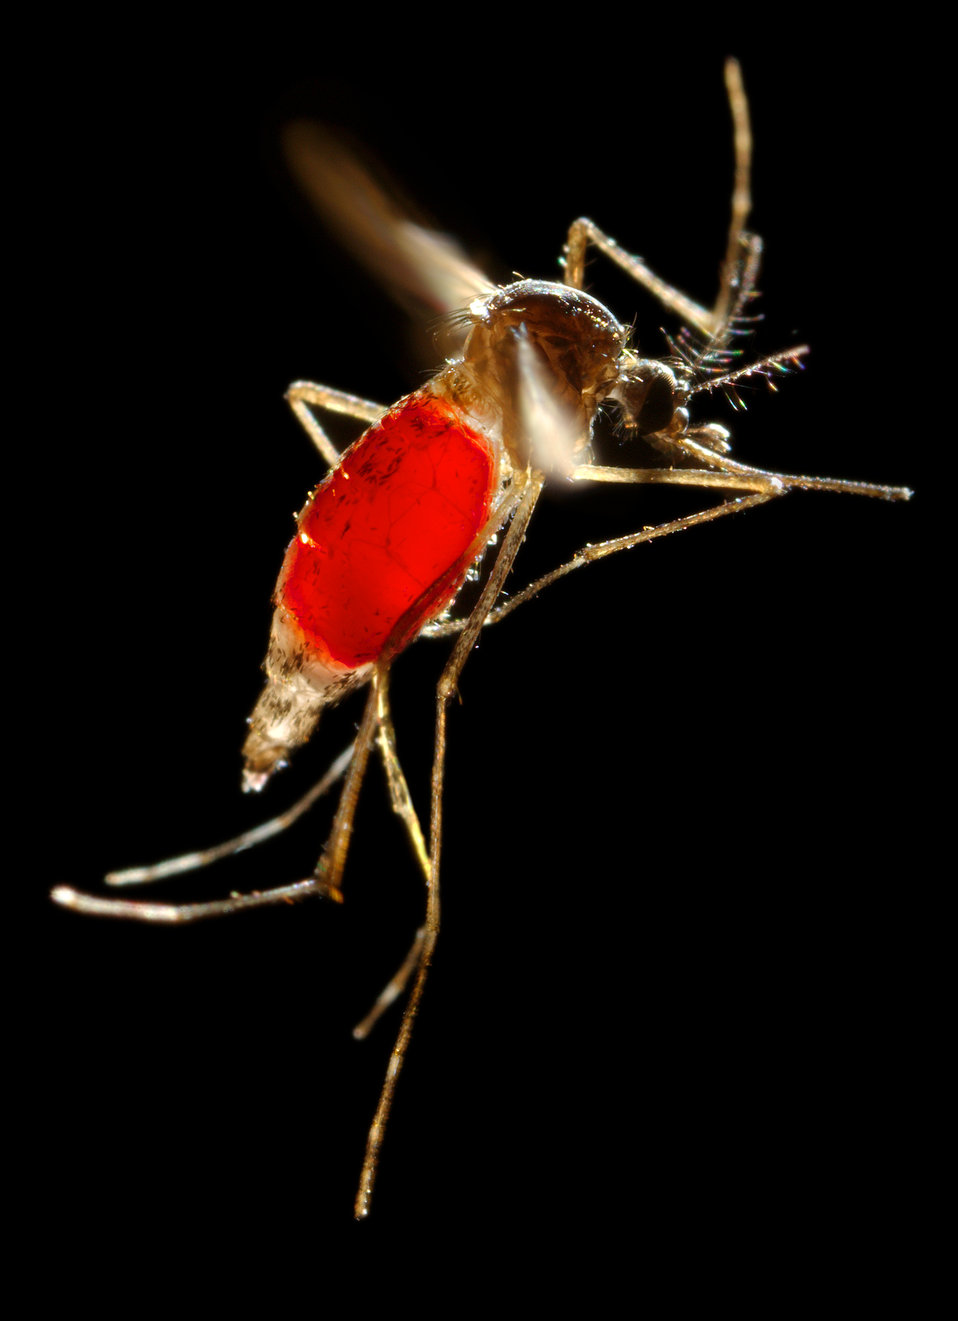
With a newly-obtained fiery red blood meal visible through her transparent abdomen, the now heavy female Aedes aegypti mosquito took flight as she left her host's skin surface. In this case, what would normally be an unsuspecting host was actually the CDC's biomedical photographer's own hand, which he'd offered to the hungry mosquito so that she'd alight, and be photographed while feeding. As it filled with blood, the abdomen became distended, stretching the exterior exoskeletal surface, thereby, causing it to become transparent, allowing the collecting blood to become visible as an enlarging intra-abdominal red mass. The wings seem to be working overtime in order to keep her aloft.